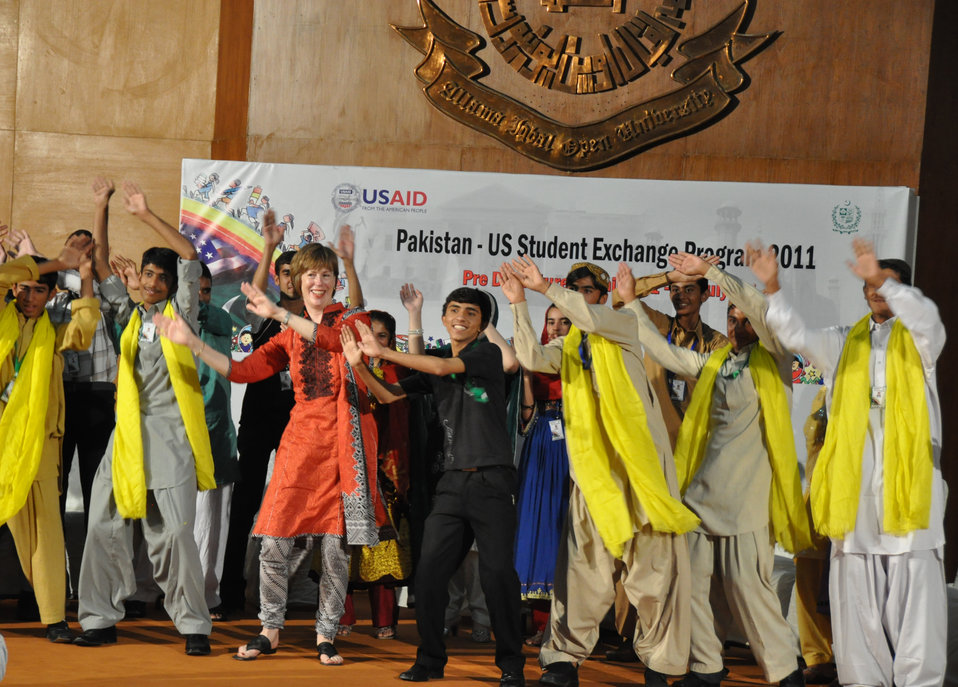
Pakistan-U.S. Student Exchange Program 2011

July 20, 2011: Dr. Marilyn Wyatt, Wife of U.S. Ambassador Cameron Munter discussed with a group of 43 students from all over the country the similarities and differences between the Pakistani and American cultures.
“Our two countries are literally half way across the world from each other,” said Dr. Wyatt during the discussion. “We have very different cultures, languages, and even food. However, we also are very similar: we love our countries, our families, and we are all working to make this world a better place.”
The 43 boys and girls from USAID-supported schools in Balochistan, FATA, and Sindh were participating in a ten-day training workshop organized by the USAID ED-LINKS program at the Allama Iqbal Open University Campus in Islamabad. During this program, 15 to 21 year old students explored cultural commonalities between Pakistan and American culture and values, such as folk music, clothing, food, and history. The program included visits to museums and other cultural sites around Islamabad, as well as a variety of research projects. Students prepared skits based on their learning.